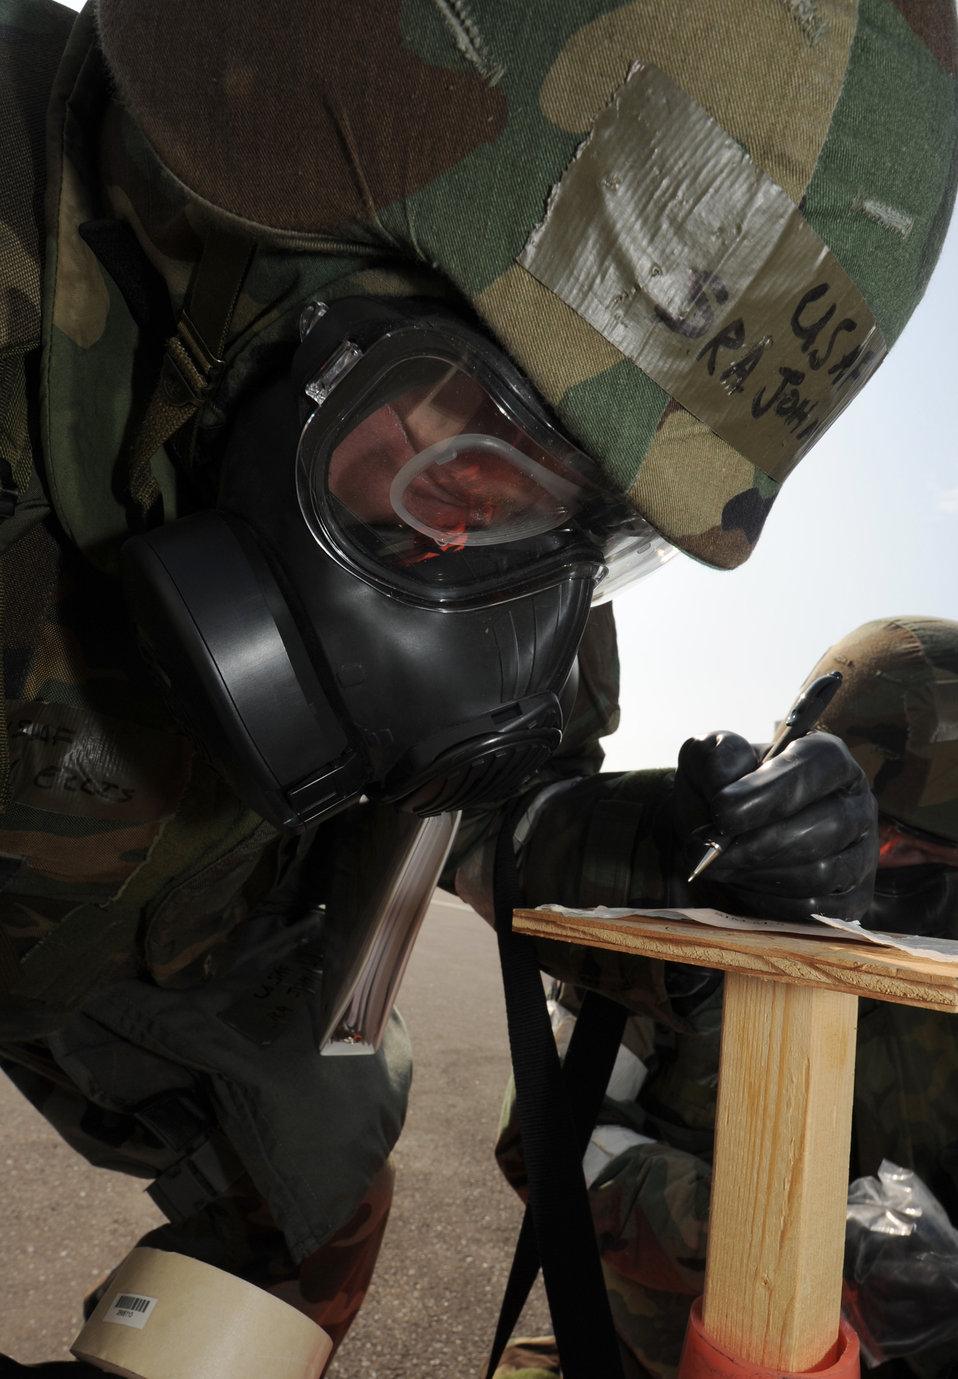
Simulated attack training exercise

Senior Airman John Ellis replaces contamination detection paper on a stanchion June 20, 2011, during a training exercise at Misawa Air Base, Japan. Airman Ellis is assigned to the 35th Civil Engineer Squadron.